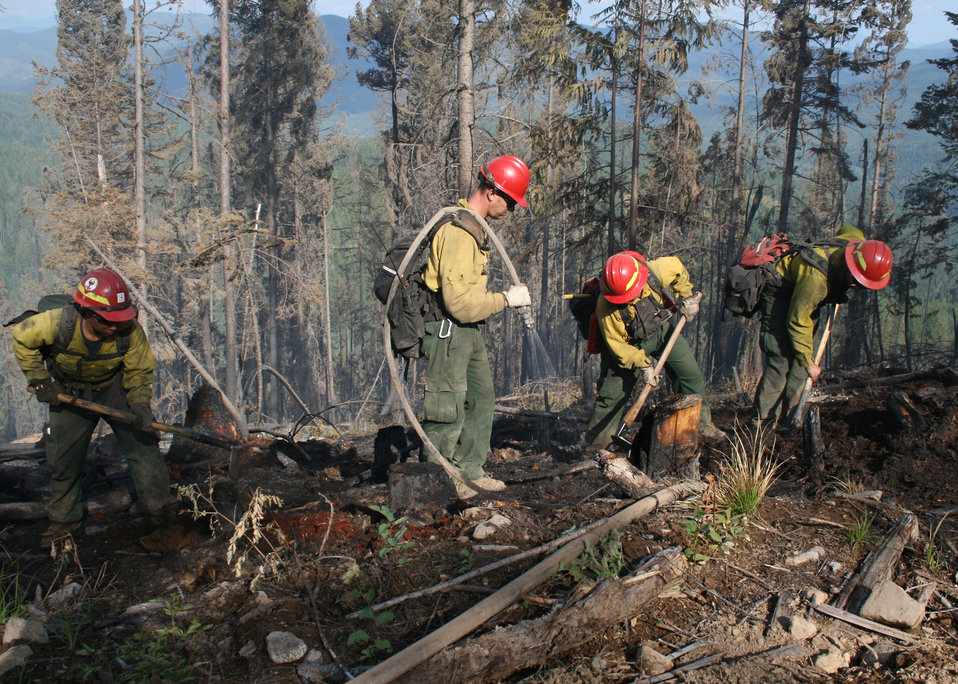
Firefighters supported by three fire engines, two helicopters, two water tenders, a dozer and an air tanker battled to contain the 90 acre Rogers Fire located on Mt. Rogers five miles west of Aladdin, WA on the Colville National Forest. Firefighters worked under adverse conditions with steep terrain and gusting winds to reduce the loss of timber and protect the Rogers Mountain Trail. The Rogers Fire began on Aug. 9, 2011 and was controlled by Aug. 19, 2011 with mop up crews ensuring that no flare-ups occurred. Colville National Forest has 1.1 million acres in northeastern Washington and includes the Kettle River, Selkirk Mountain ranges, and the upper reaches of the Columbia River.